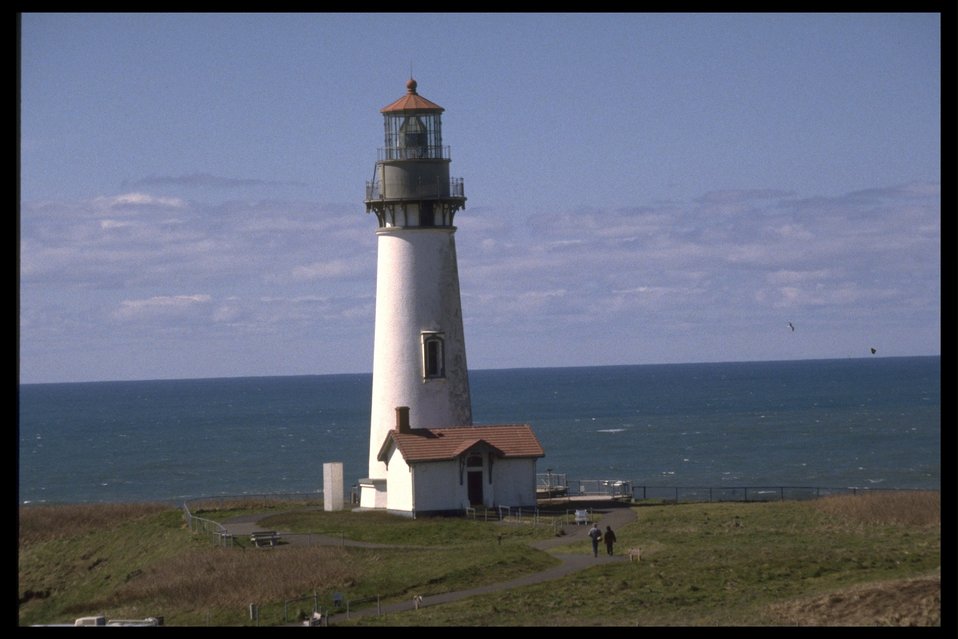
Yaquina Head Lighthouse.